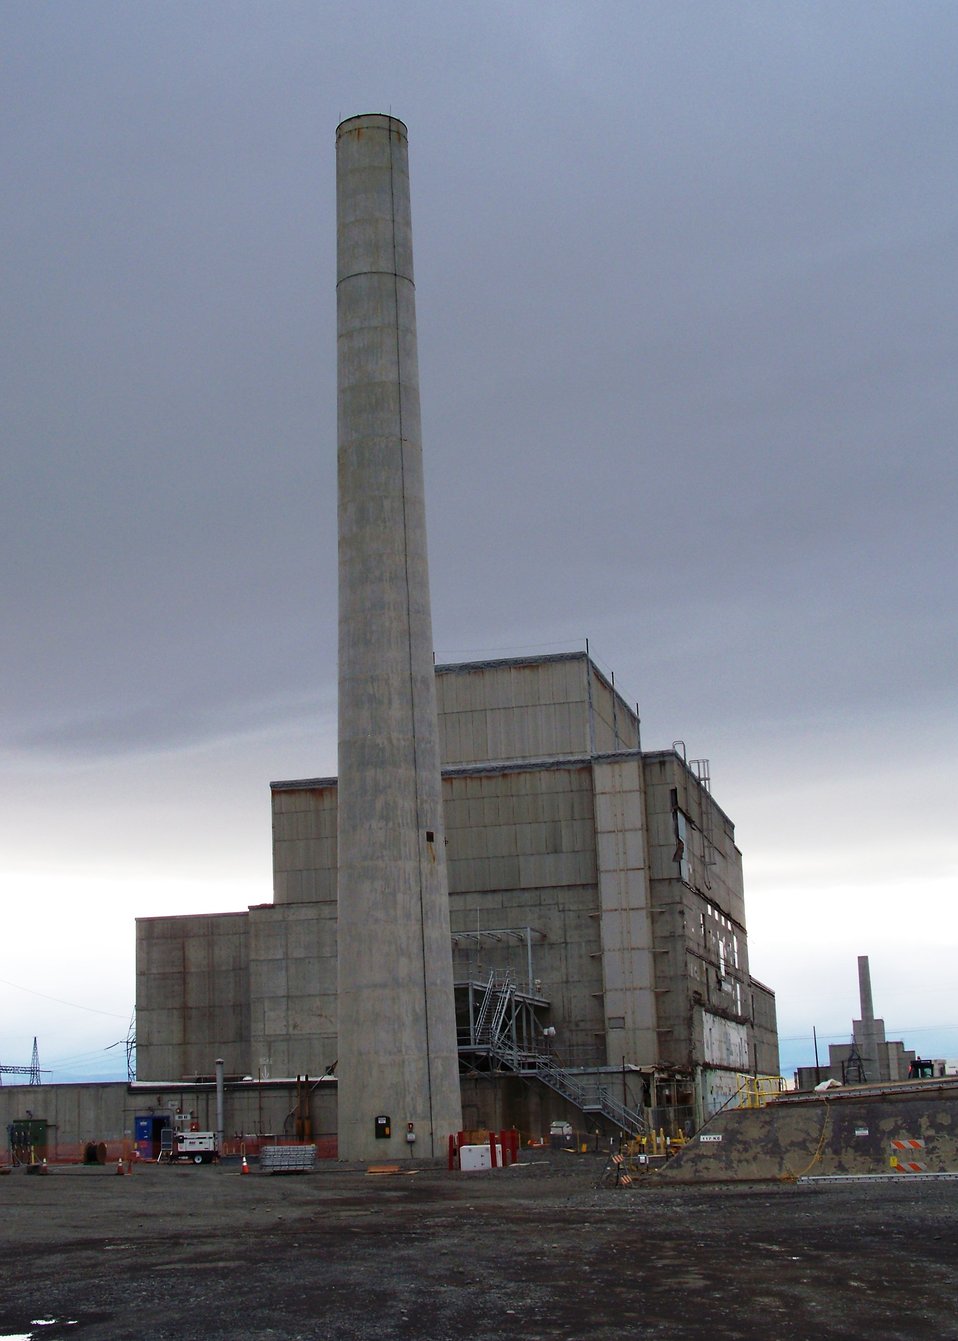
116KE reactor stack before demolition

Workers safely demolished a 175-foot-high exhaust stack at the Hanford Site in southeastern Washington state, a project supported by $420,000 in Recovery Act funds.